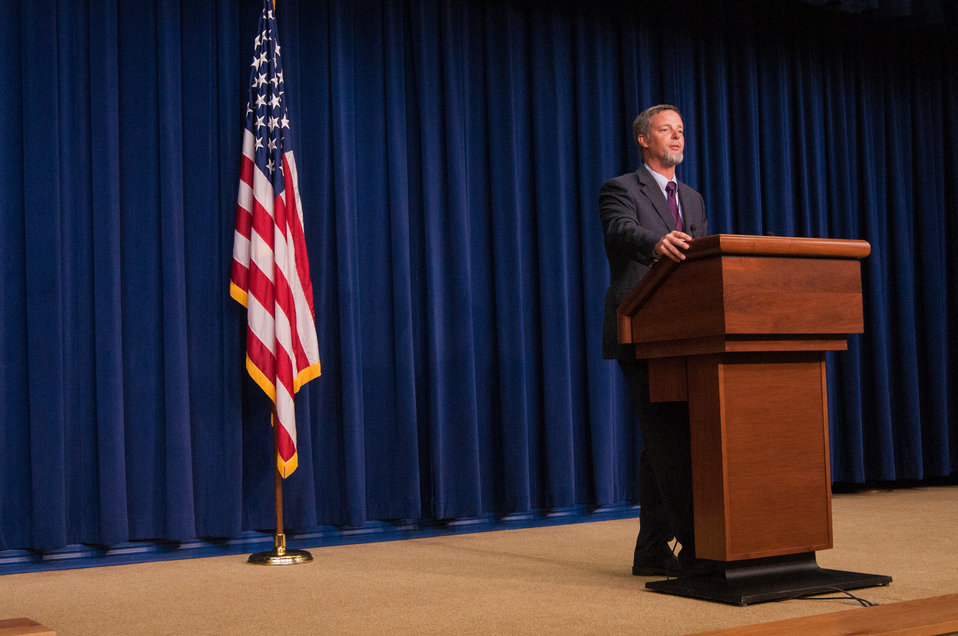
White House Domestic Policy Council Senior Policy Advisor for Rural Affairs Doug McKalip speaks at a meeting of the White House Rural Council to an audience of the State President’s Conference of the FFA on Wednesday, Jul. 24, 2013 in Washington, D.C. McKalip discussed White House Initiatives for rural America and thanked the FFA National Presidents for their efforts.